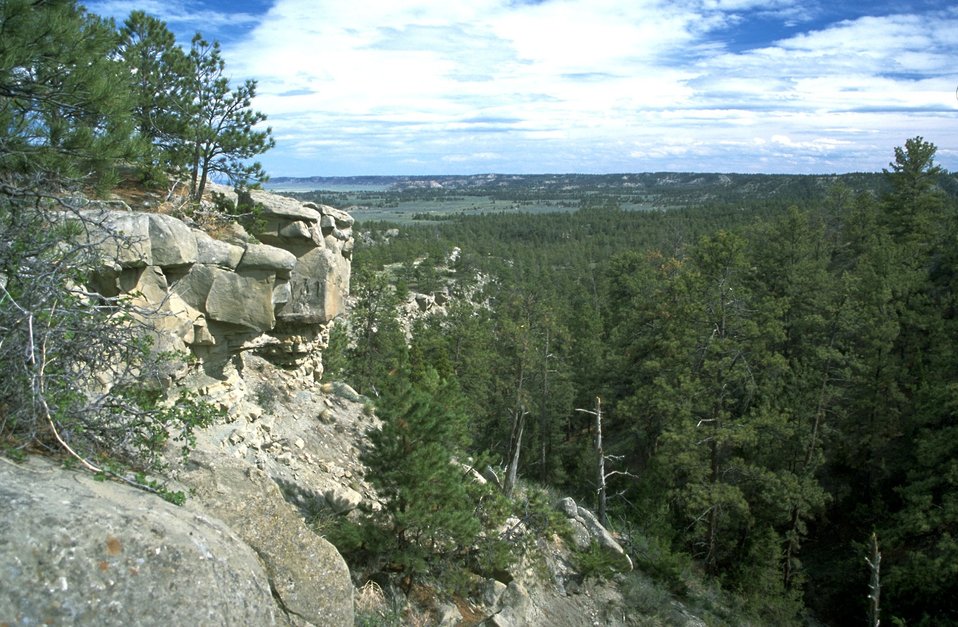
Looking east from rimrocks in the Acton Recreation Area